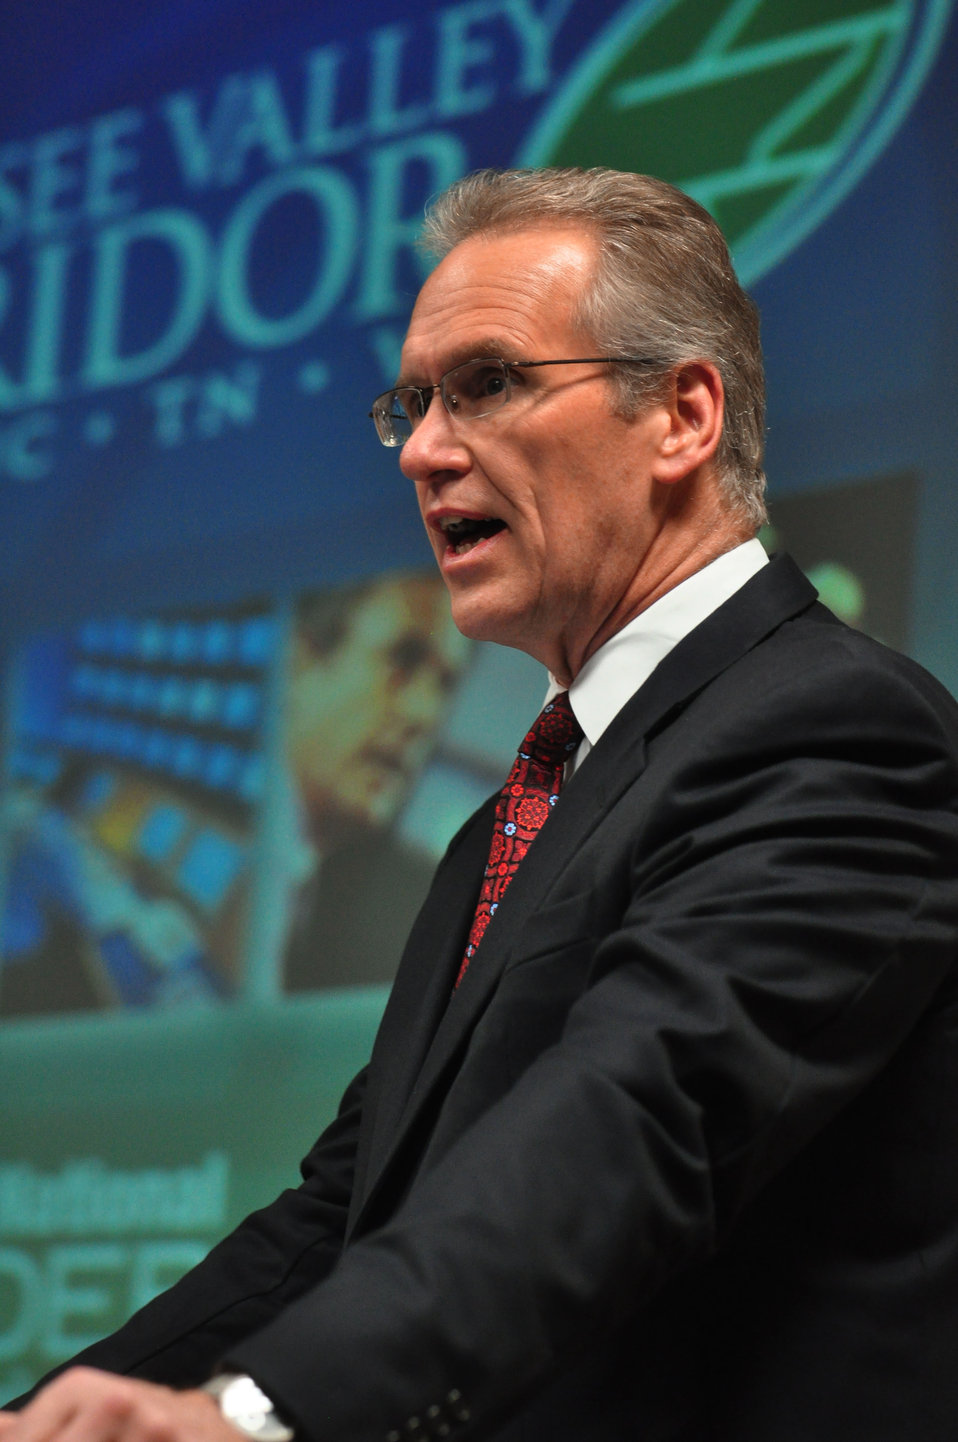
Tennessee Valley Corridor Summit Oak Ridge

13-062 DOE photo Lynn Freeny 5-29-2013 Oak Ridge Tennessee